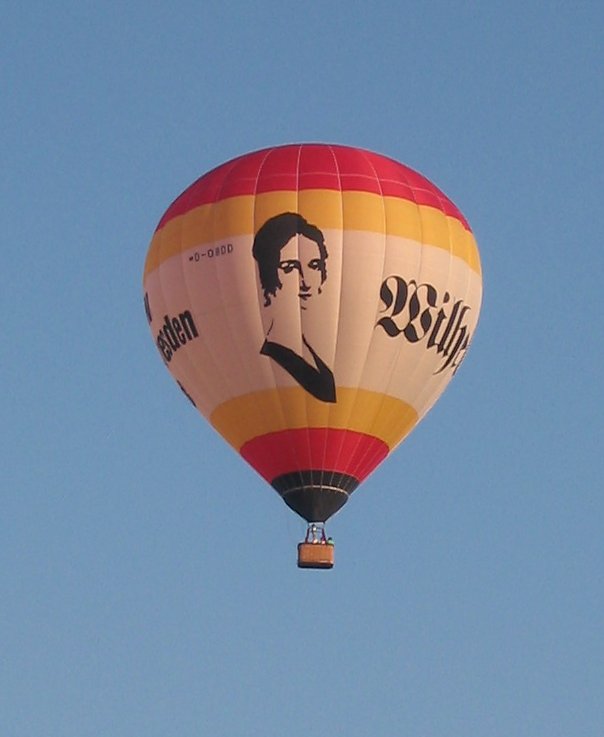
Deutsch: Heißluftballon D-OBDD 'Wilhelmine Reichard' in Fahrt über Dresden. Hot air balloon D-OBDD above Dresden.